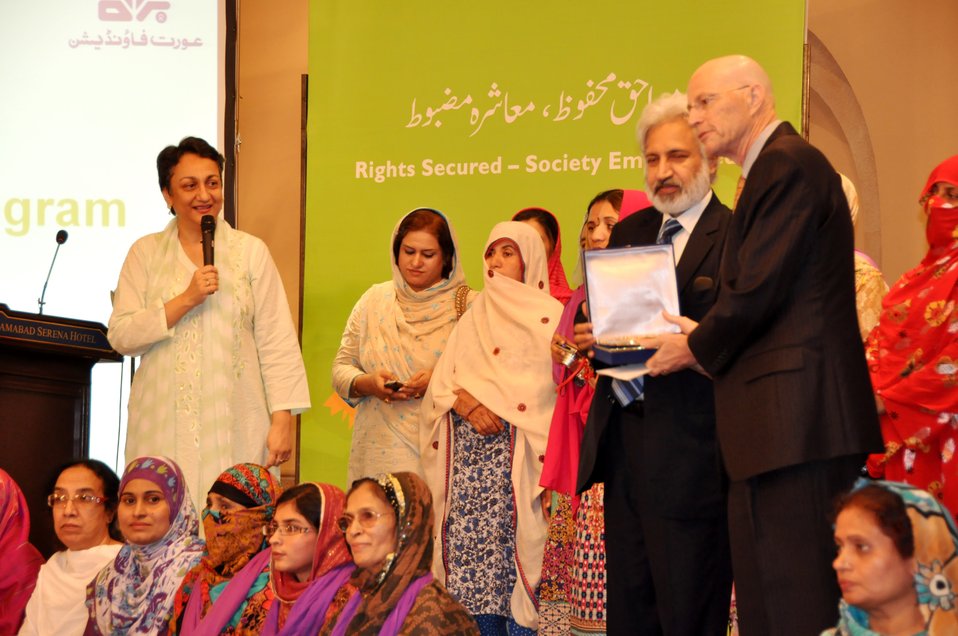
Annual Event- Gender Equity Program titled as “Rights Secured – Society Empowered”